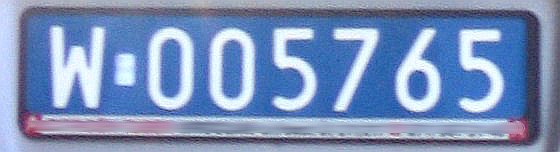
Polski: polska tablica rejestracyjna pojazdu zarejestrowanego dla konsulatu Republiki Federalnej Niemiec we Wrocławiu